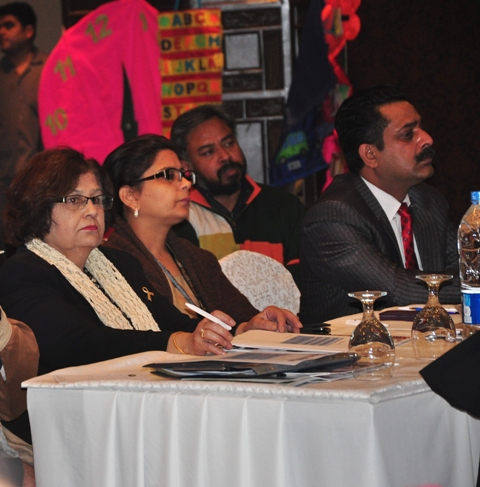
Education Workshop 145